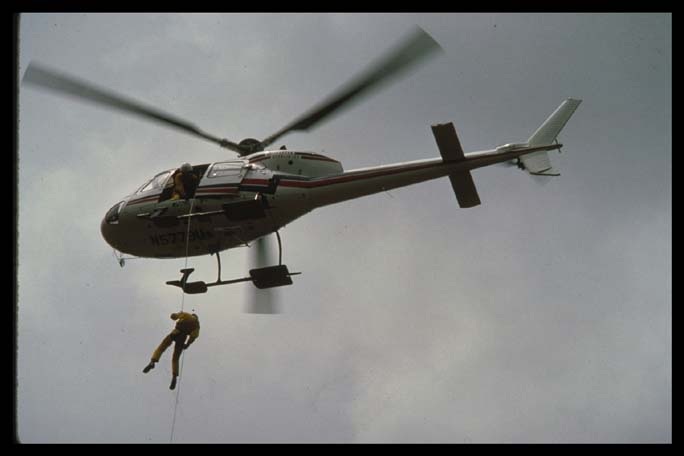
Rappeller